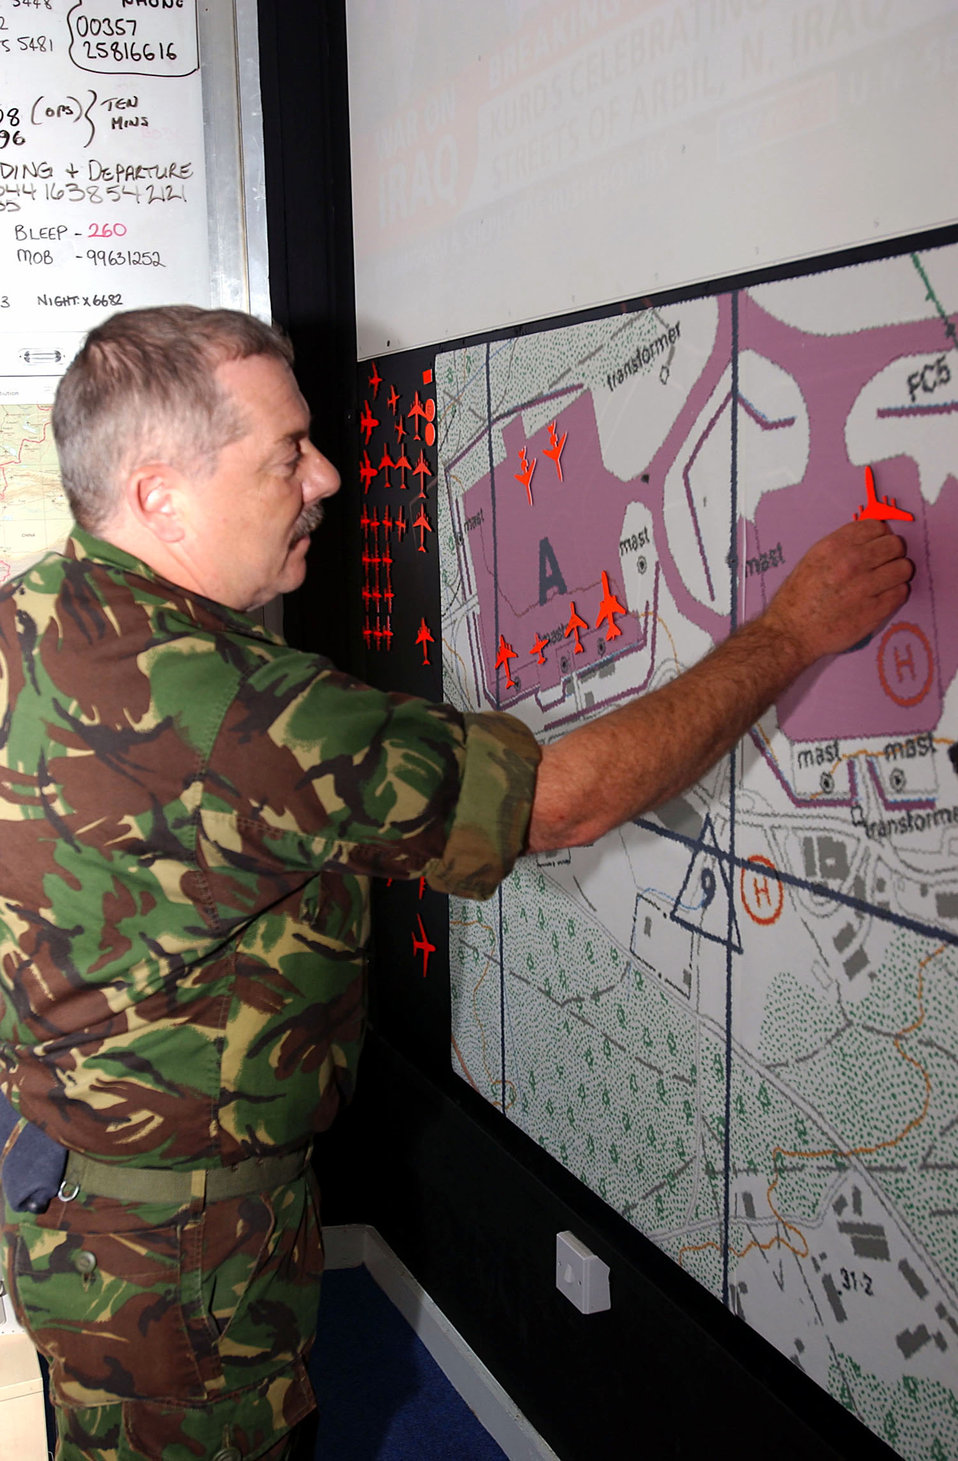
English accent

OPERATION IRAQI FREEDOM -- Royal Air Force Sgt. Dave Brumby, movement controller, arranges aircraft silhouettes on a map of the airfield parking plan. 401st Air Expeditionary Wing command post personnel are working side-by-side with their British counterparts supporting Operation Iraqi Freedom. .